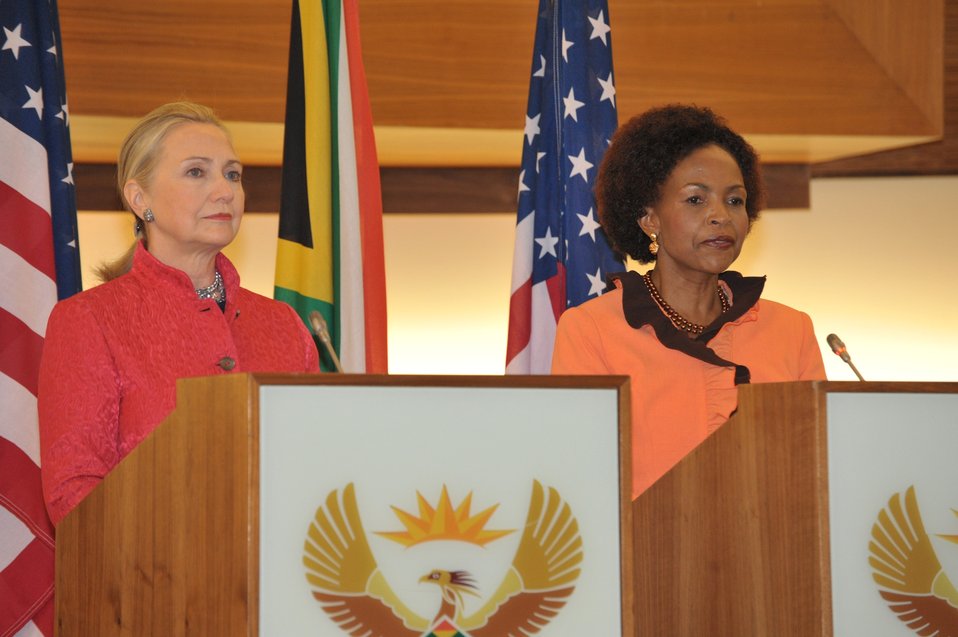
Secretary Clinton and South African Foreign Minister Nkoana-Mashabane Address Reporters

U.S. Secretary of State Hillary Rodham Clinton holds a joint press availability with South African Foreign Minister Maite Nkoana-Mashabane in Johannesburg, South Africa, on August 6, 2012.